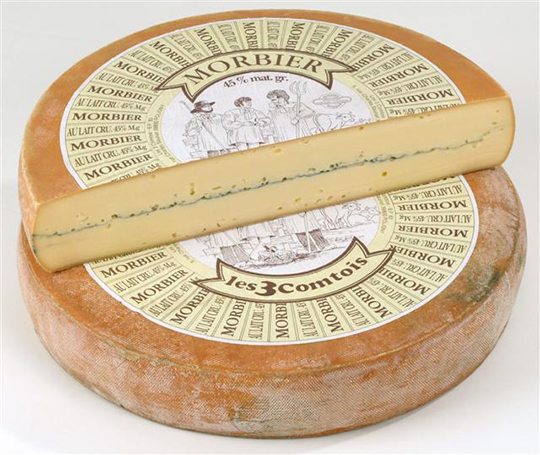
RECALLED – Trois Comtois Morbier cheese

July 29, 2013 – Product Recall – Trois Comtois Recalls Trois Comtois Morbier Cheese for Possible Health Risk.